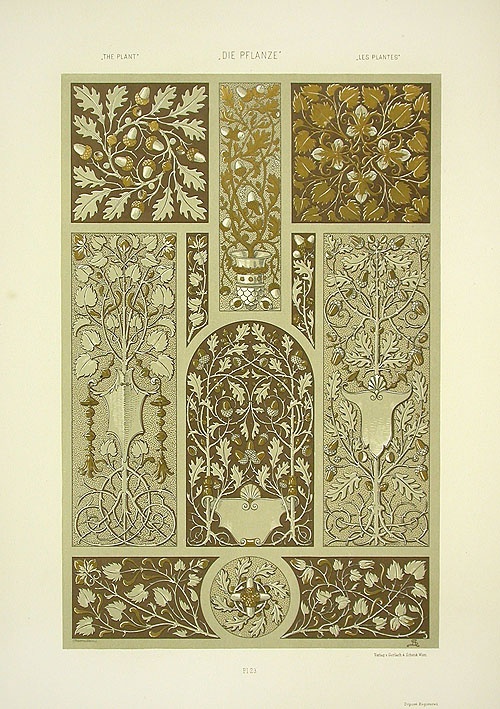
Deutsch: Lithografie von Anton Seder, Titel unbekannt